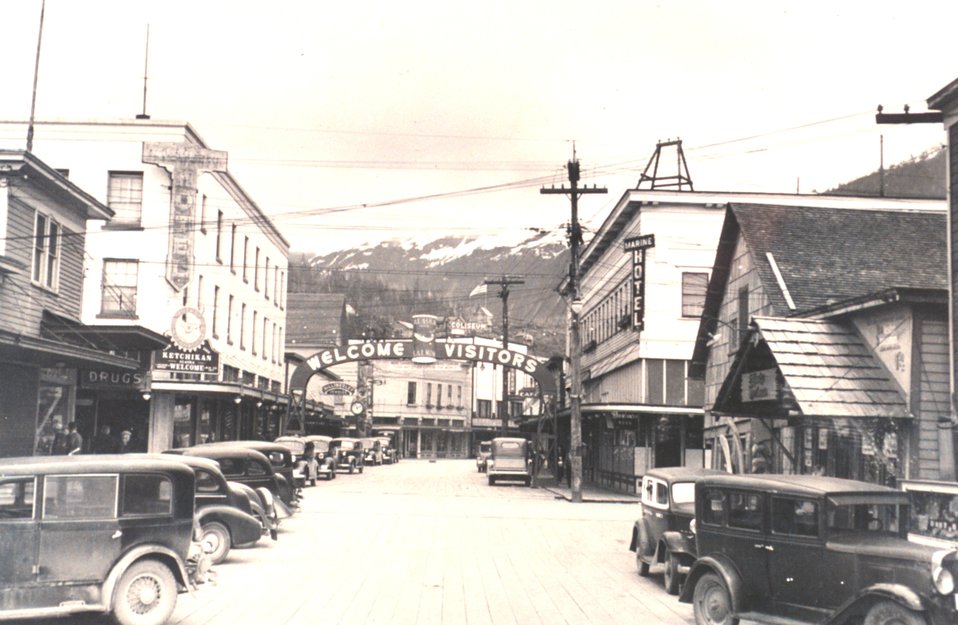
Mainstreet of Ketchikan. F&WS 10,055.